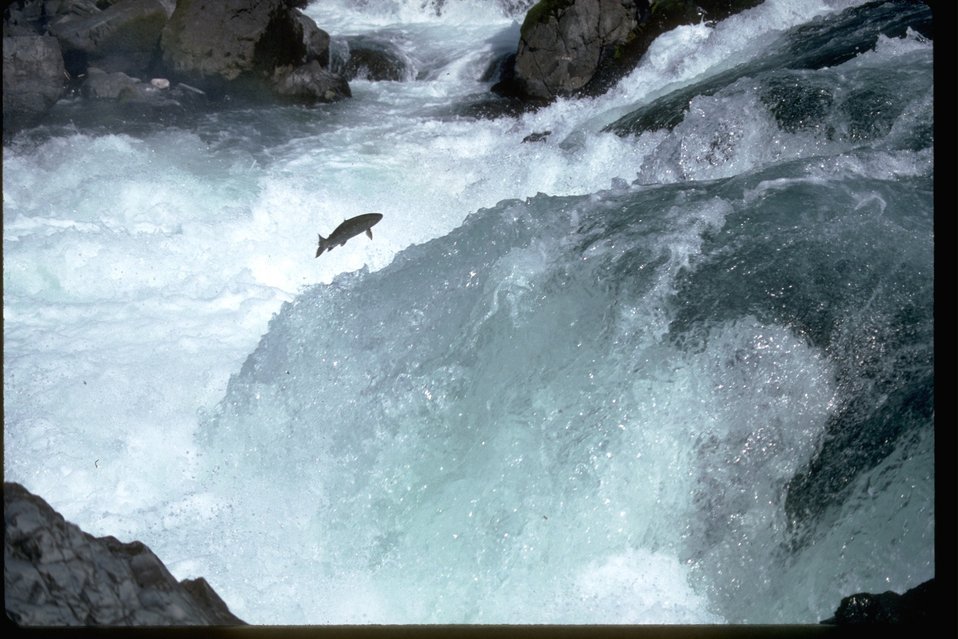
Salmon or Steelhead jumping up falls.